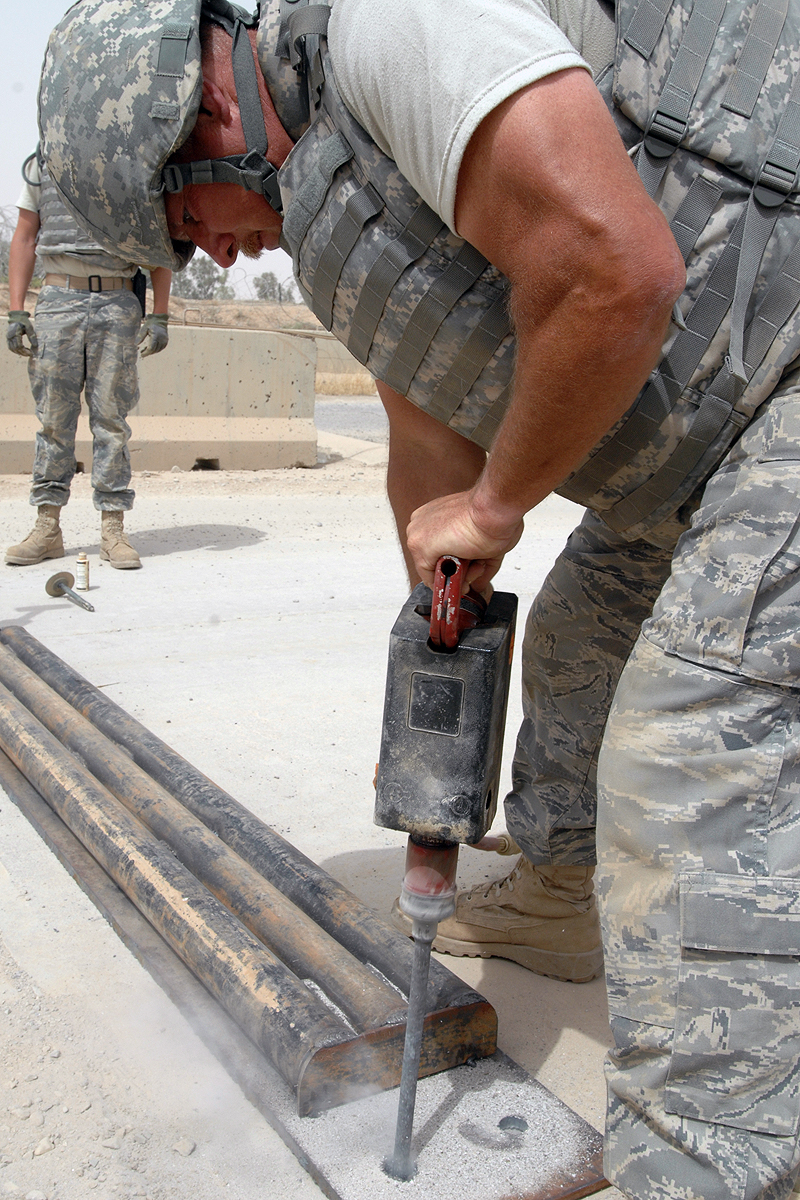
Airmen overcome bumps in road

Master Sgt. Aubrey Miller installs new speed bumps May 22 at Kirkuk Air Base, Iraq. The speed bumps are meant to not only control speed but also to increase the safety of the security-forces Airmen manning the gates. Sergeant Miller is assigned to the 506th Expeditionary Civil Engineer Squadron. He is a native of Wasilla, Alaska, deployed from Elmendorf Air Force Base, Alaska.